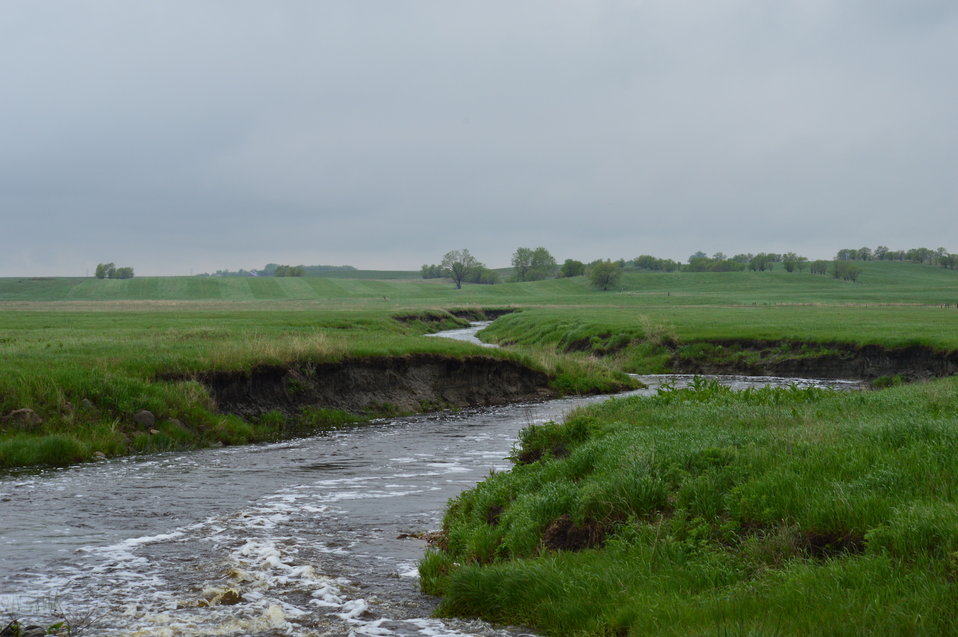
Creek

Scenery and wildlife at Lost Lake National Wildlife Refuge in North Dakota.